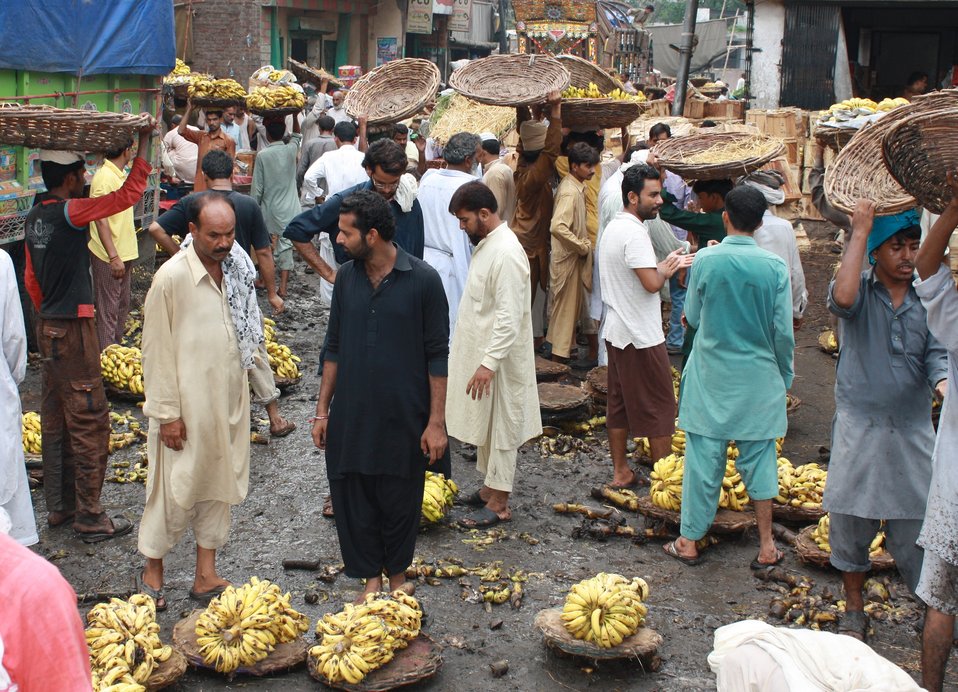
USAID Firms Project's Agriculture Marketing Reforms - 4

Traders and commission agents participate in the fruit action at the start of a busy day at the wholesale fruit mandi as soon as the trucks unload the fresh produce from the farms. Retailers can be seen displaying their fresh fruits for the encroachers who are busy negotiating rates.